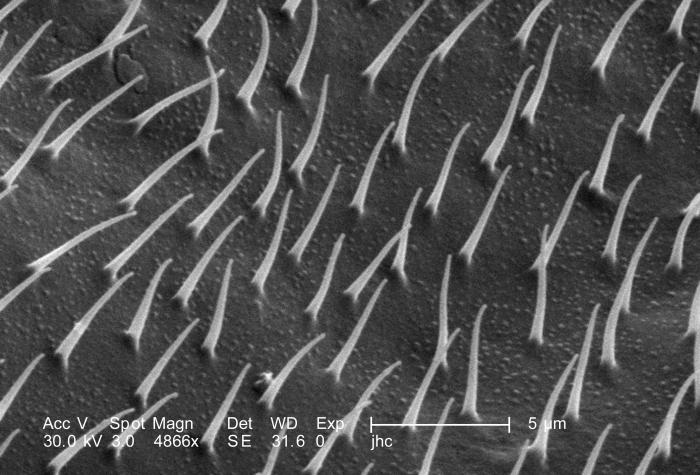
At twice the magnification, 4866X, of PHIL 9909, this scanning electron micrograph (SEM) depicted some of the morphologic details found on the wing surface of an unidentified 1/4"-sized black flying insect with a small red mark on its dorsum, discovered in the suburbs of Decatur, Georgia. As a member of the Phylum Arthropoda, i.e., Arthro = 'jointed', and poda 'leg', this insect sported three pairs of jointed legs, which placed it into the Family, Insecta>.